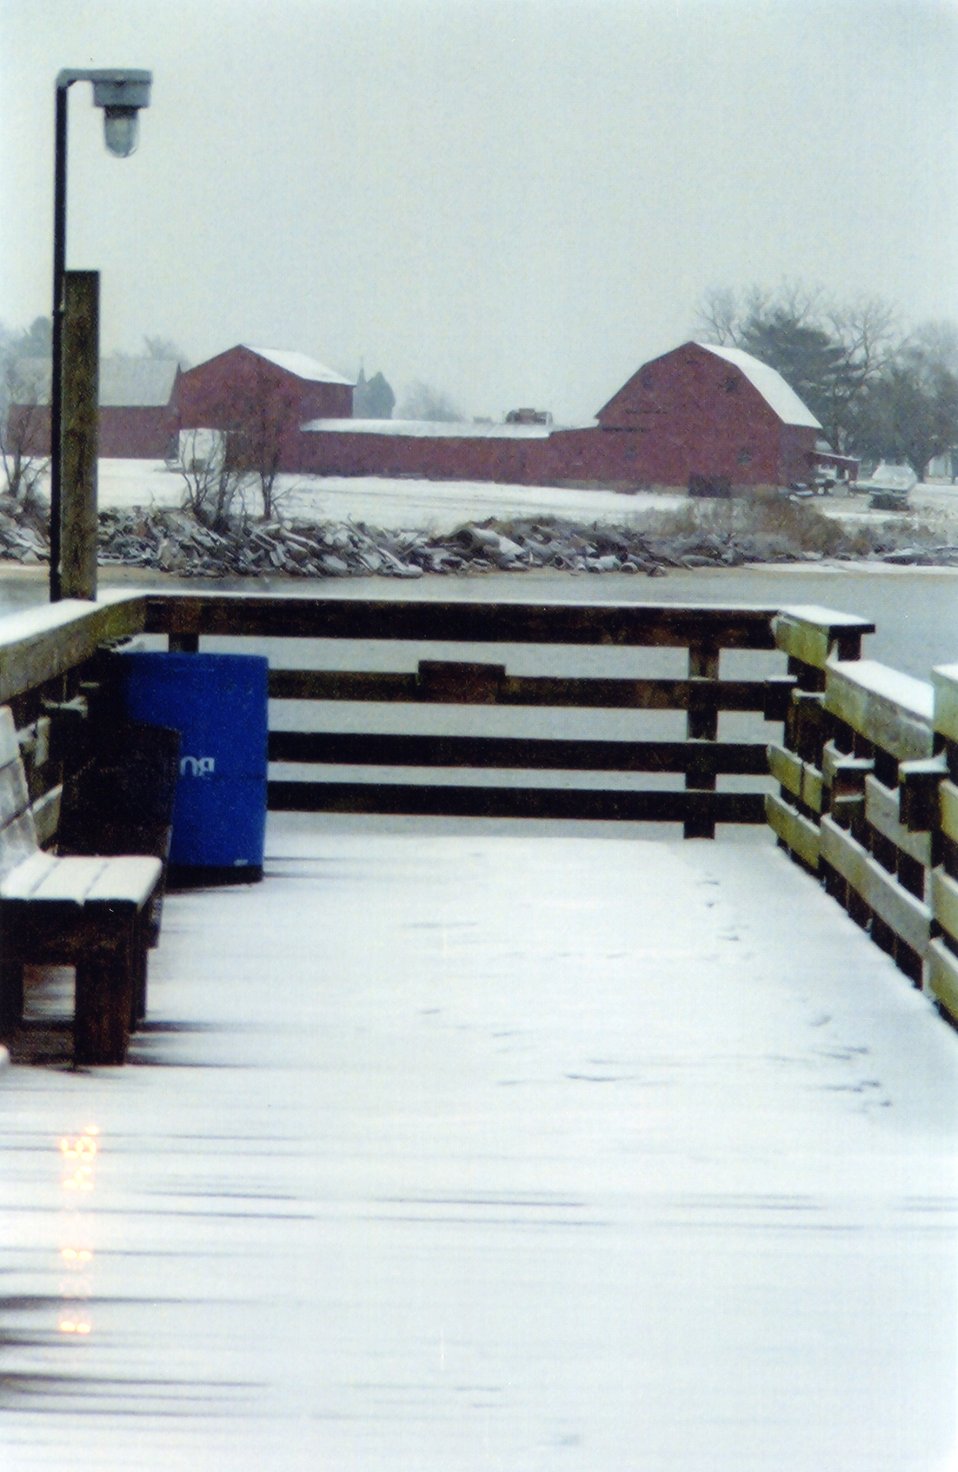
Pepper Langley Fishing Pier at Solomons Island.